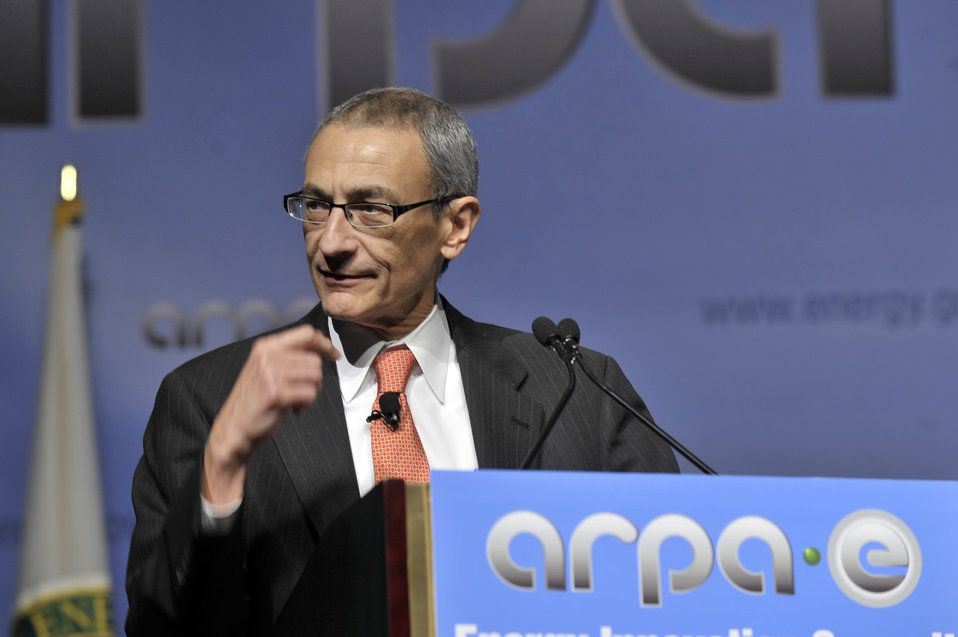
ARPA-E Energy Innovation Summit 2011, 79 of 83

John Podesta, President and CEO, Center for American Progress.